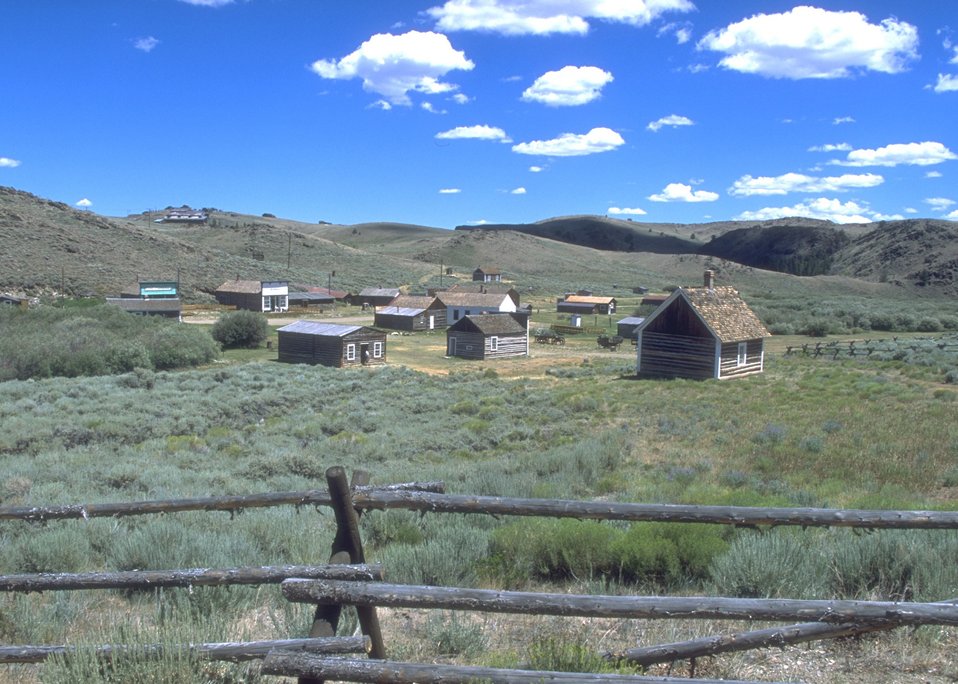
Restored buildings at South Pass City, Lander Field Office.